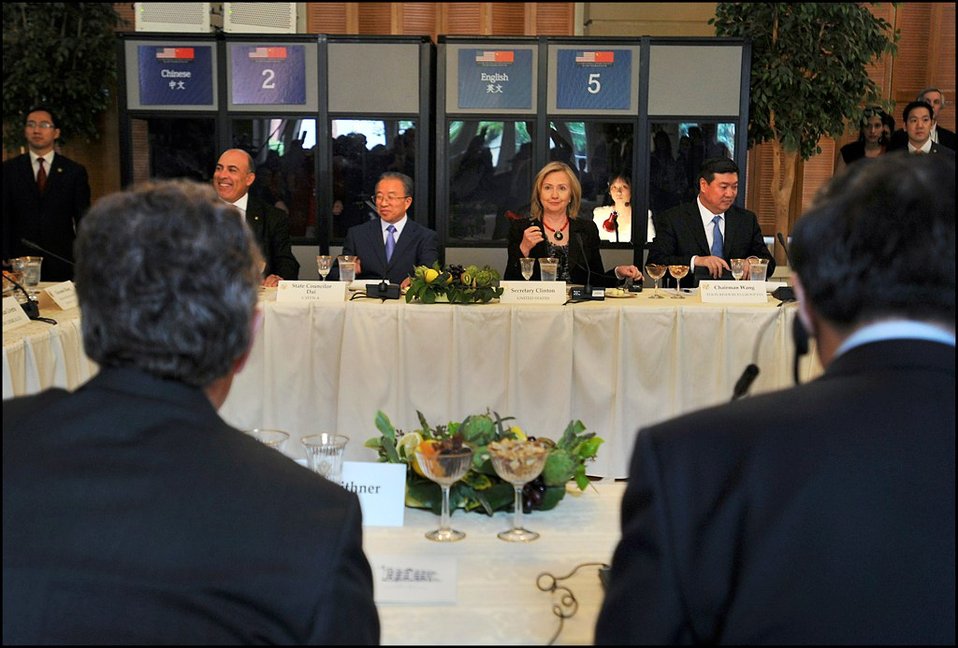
U.S.-China Strategic and Economic Dialogue

On Tuesday, the strategic and economic tracks of the U.S.-China Strategic and Economic Dialogue came together for a roundtable lunch with U.S. and Chinese business leaders.